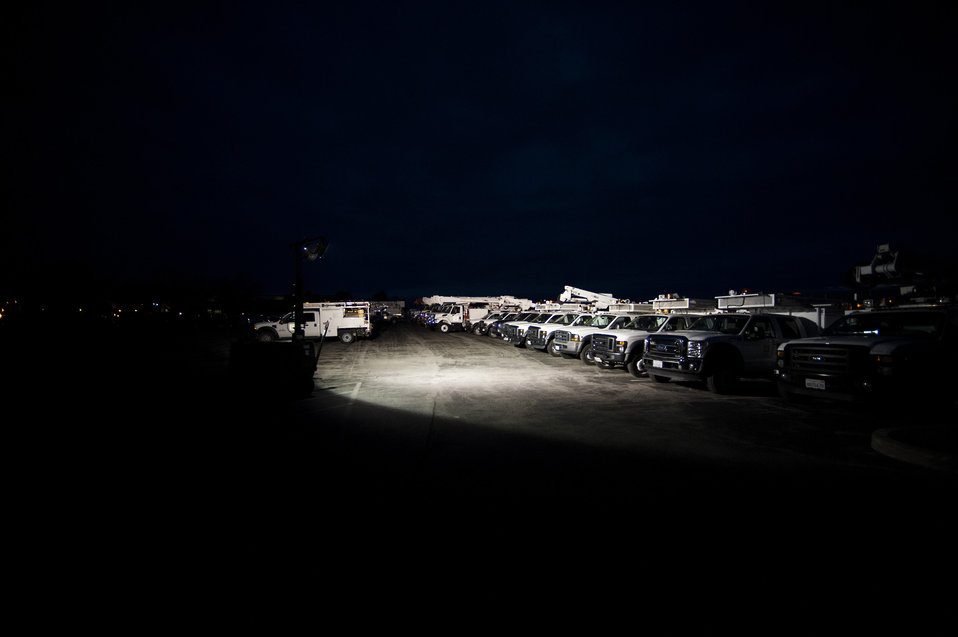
Standing ready

Utility trucks sit staged in a parking lot for the Hurricane Sandy relief effort at Stewart Air National Guard Base, N.Y., Nov. 2, 2012. Air Mobility Command responded to a Federal Emergency Management Agency request to move 637 short tons of supplies and equipment from Southern California to New York on 12 C-17 Globemaster III and five C-5 Galaxy aircraft in the wake of Hurricane Sandy.